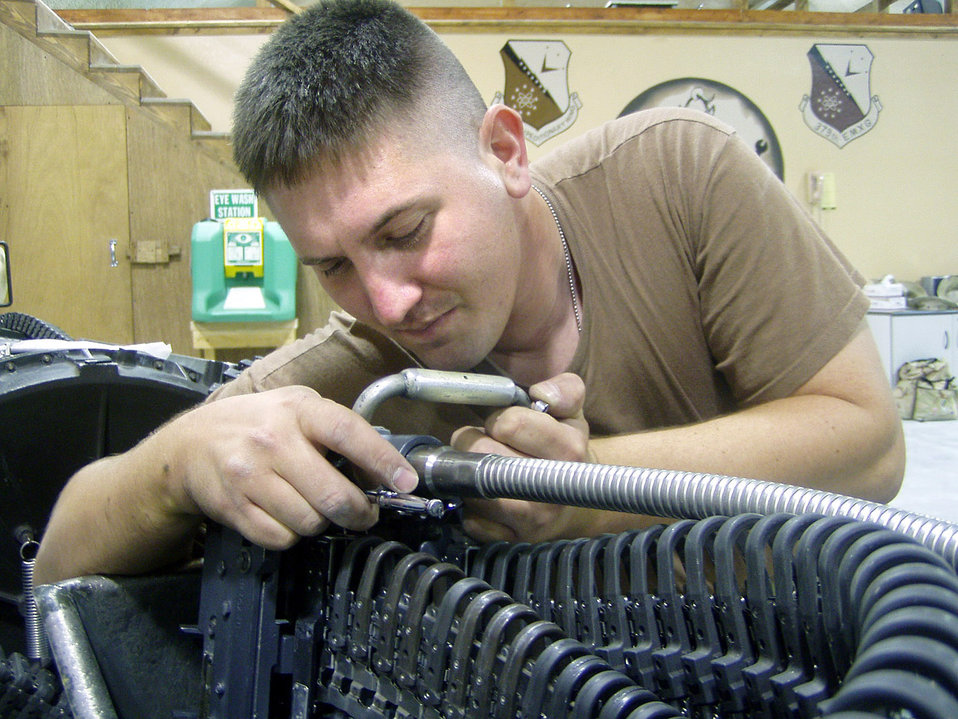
Loader up

SOUTHWEST ASIA -- Senior Airman Jason Wiley installs a flexible drive shaft on an ammunition loader at a forward-deployed location. It is used to load 20 mm ammunition into F-15 Eagle and F-16 Fighting Falcon internal gun systems and can hold enough ammunition for about three aircraft. Environmental conditions in the desert require Airmen from the armament flight to inspect the loading system every 45 days. Airman Wiley is deployed from the 122nd Fighter Wing at Fort Wayne Air National Guard Base, Ind.